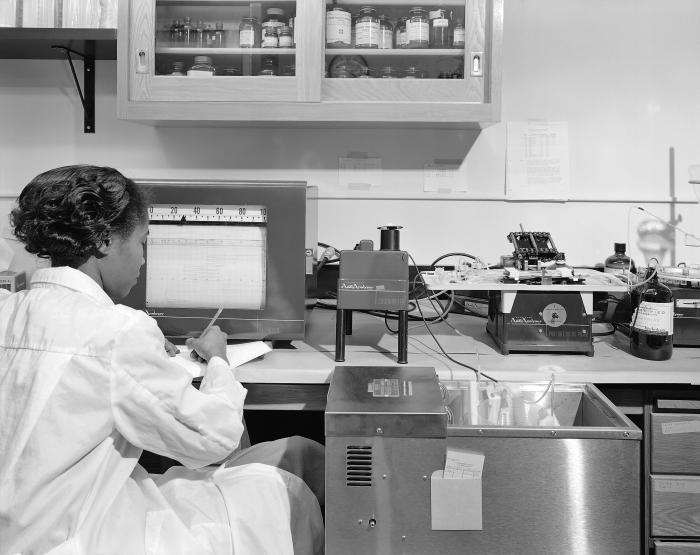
This historic image created in 1964, depicted laboratory technician, Dorothy Roland at work in one of the Centers for Disease Control's laboratories. Ms. Roland was in the process of recording data captured by an AutoAnalyzer machine, while seated at her workbench.